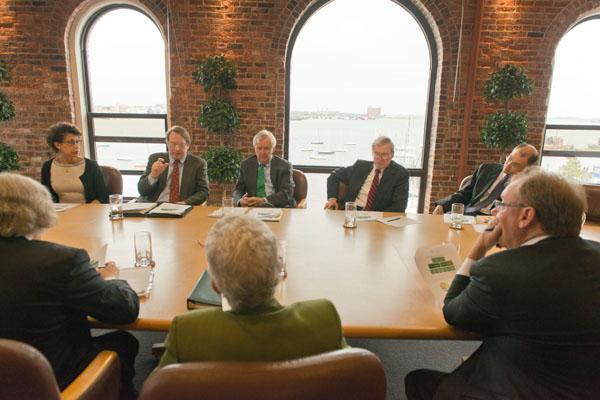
Day in the Life - Earth Day, April 22, 2014

2:44 pm – McCarthy, Moniz and EPA Regional Administrator Curt Spalding lead a discussion with the Boston Green Ribbon Commission, business and civic leaders charged by Mayor Walsh to help implement the city's Climate Action Plan. (8/12)